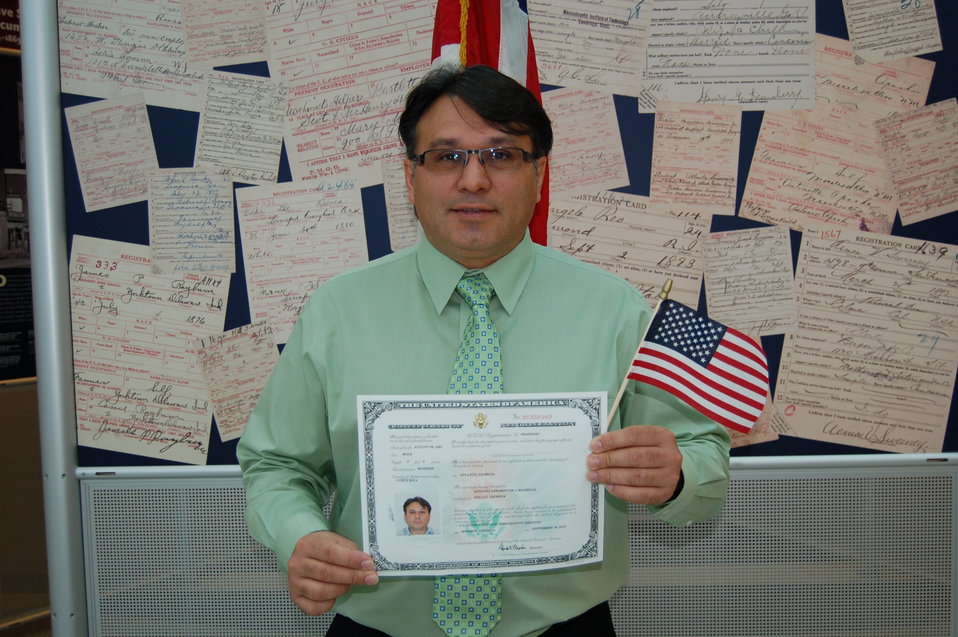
New Citizens